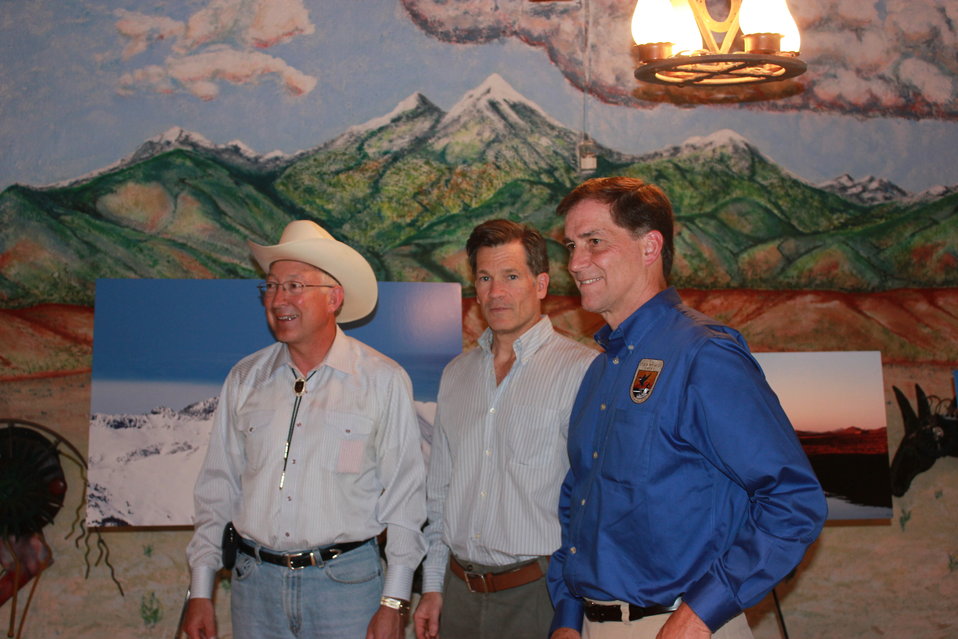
Historic Conservation Easement in Sangre de Cristo Mountains